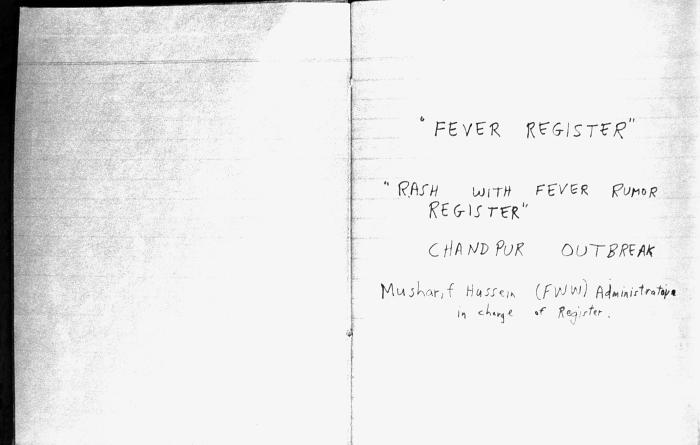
Data was recorded not only in the Containment Book, and the cross registry, but in the 'Fever Register' pictured here, as well, which contained the names and locations of individuals who were displaying symptoms such as a rash, or fever. The progress of these conditions was followed in order to determine if such cases could be confirmed as indeed a case of smallpox. Confirmed smallpox cases were then added to the Containment Book. With early symptoms, all cases were considered 'potential' cases, with the prevailing philosophy being to catch such cases early in order to halt transmission.